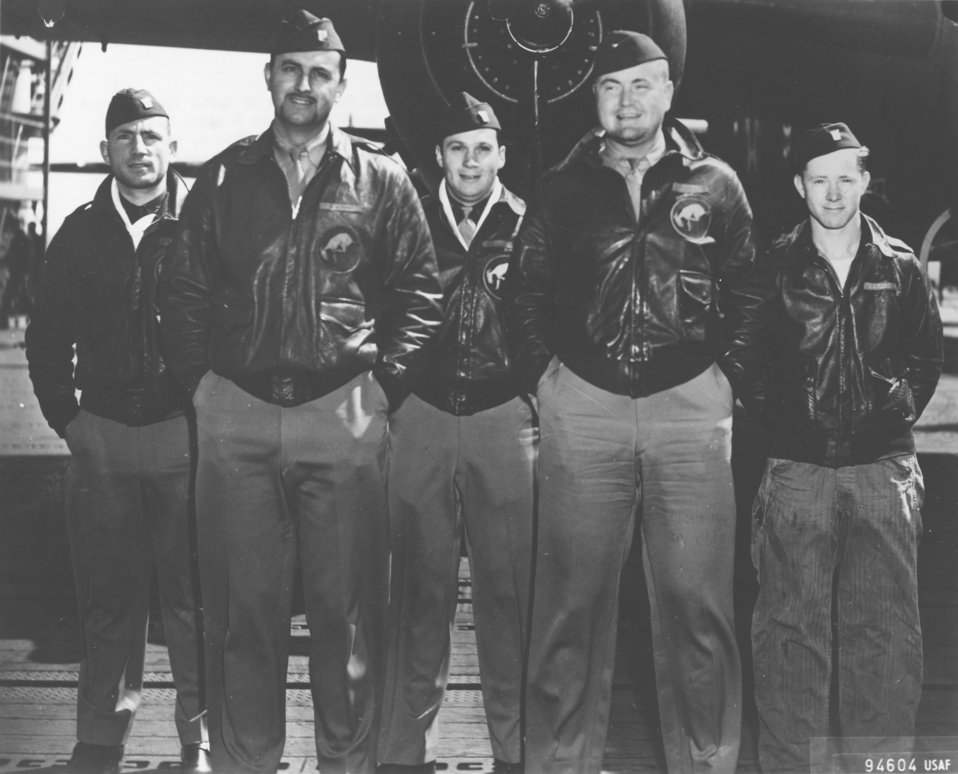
Doolittle Tokyo Raiders, Crew No. 5

Crew No. 5 (Plane #40-2283, target Tokyo): 95th Bombardment Squadron, front row: Capt. David M. Jones, pilot; and Lt. Ross R. Wilder, copilot; back row: Lt. Eugene F. McGurl, navigator; Lt. Denver V. Truelove, bombardier; and Sgt. Joseph W. Manske, flight engineer/gunner.